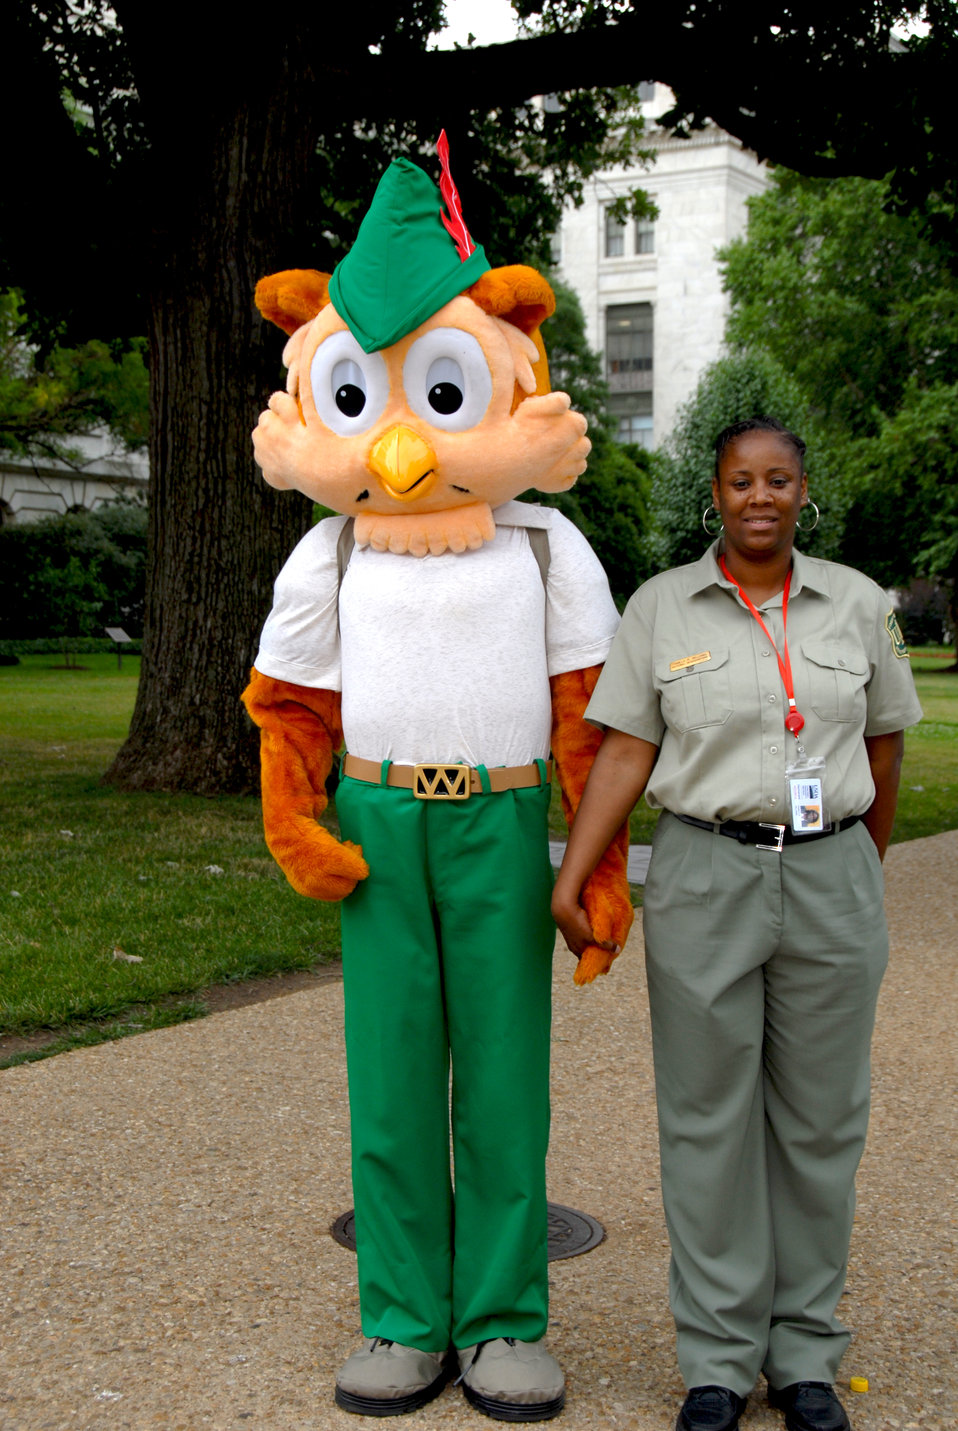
Woodsy Owl is the U.S. Department of Agriculture (USDA) U.S. Forest Service(FS) icon created in 1971 to focus attention on improving the outdoor environment. In 1997, Woodsy Owl was given a makeover and Woodsy’s slogan was changed from 'Give a hoot — don't pollute!' to 'Lend a hand — care for the land!' Woodsy Owl’s target audience are young people five to eight years old, and he was designed provide children with information and advice to help them appreciate nature.